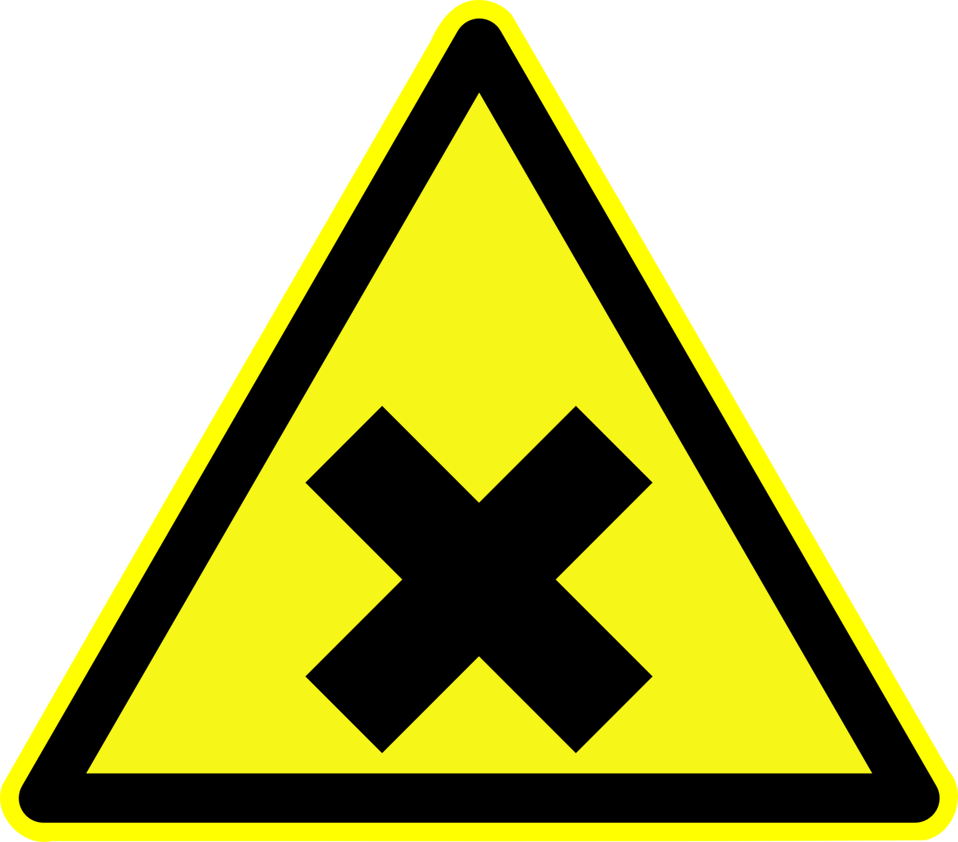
Deutsch: Warnung vor gesundheitsschädlichen oder reizenden Stoffen, Warnzeichen D-W018 nach DIN 4844-2 Harmful or irritating substances, warning sign D-W018 according to German standard DIN 4844-2